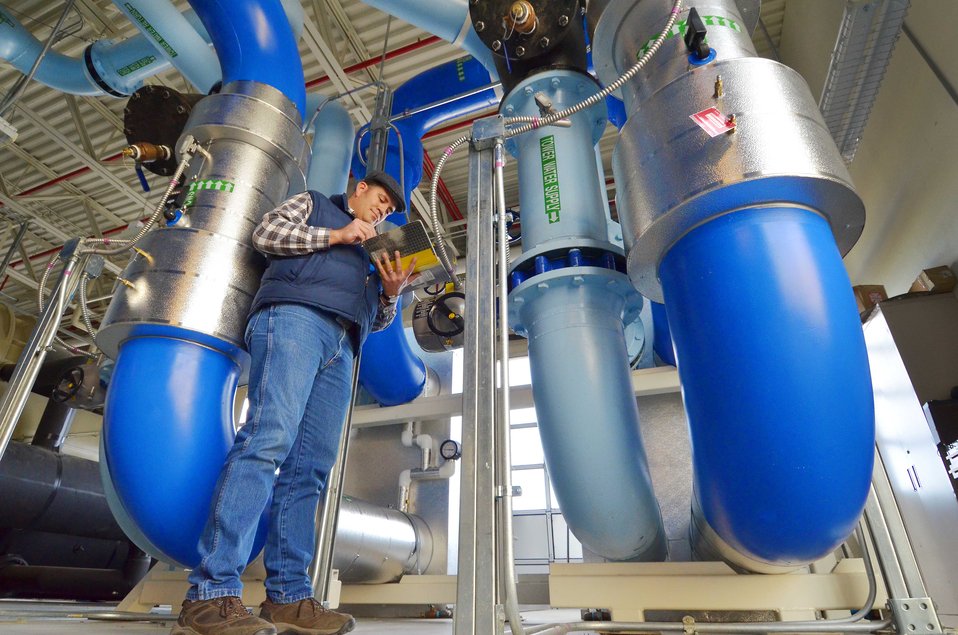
Sandia mechanical operations engineer checks out a heat exchange that's part of the labs' Free-Cooling System.

Free cooling has helped Sandia cut energy usage by more than 250 billion BTUs the past six years and reduce greenhouse gas emissions.